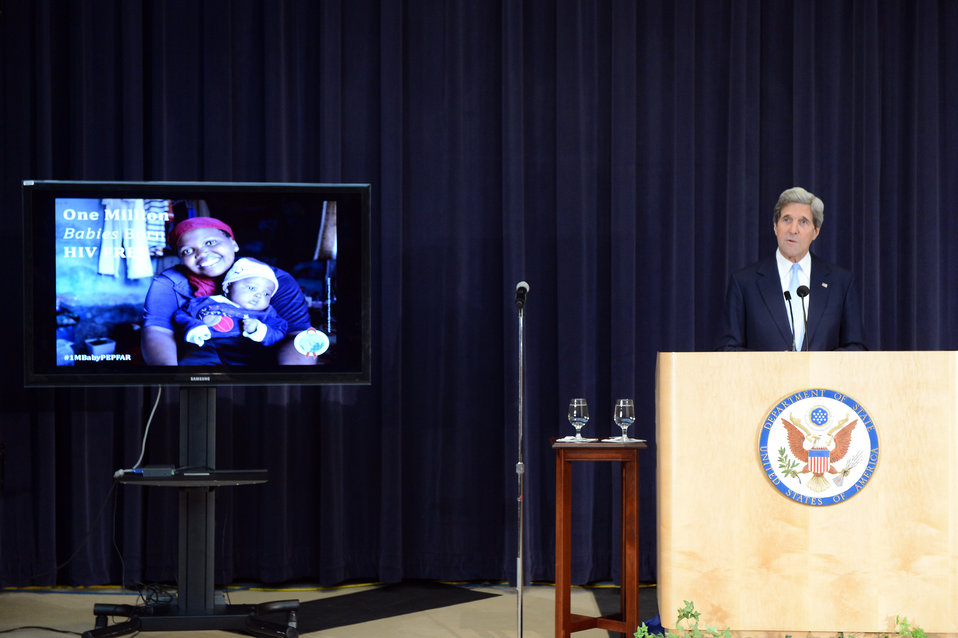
Secretary Kerry Hosts the PEPFAR 10th Anniversary Celebration

U.S. Secretary of State John Kerry hosts the President’s Emergency Plan for AIDS Relief (PEPFAR) 10th Anniversary Celebration at the U.S. Department of State in Washington, D.C., on June 18, 2013.